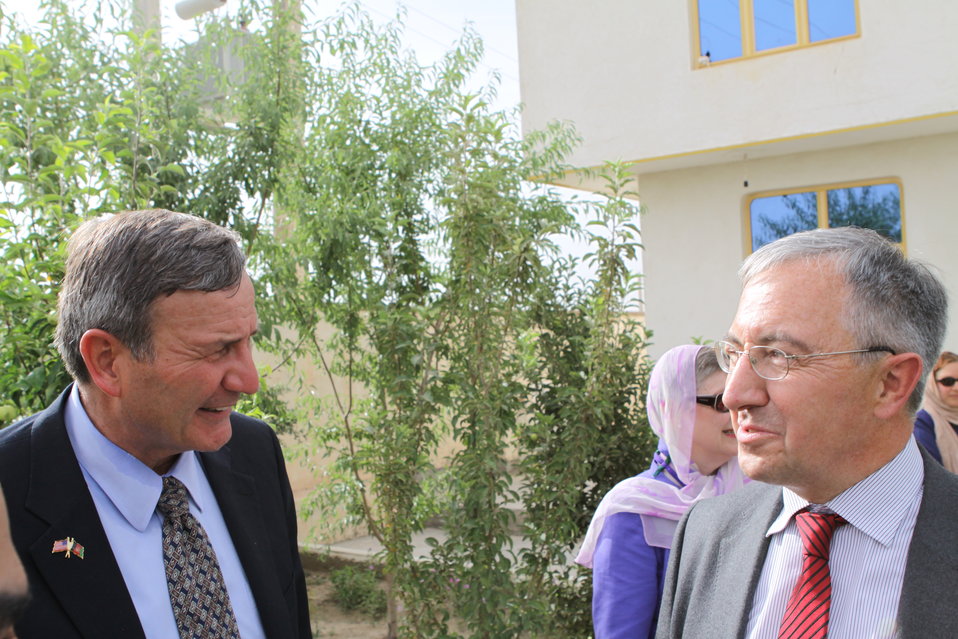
100525 Hirat Marble Conference 882